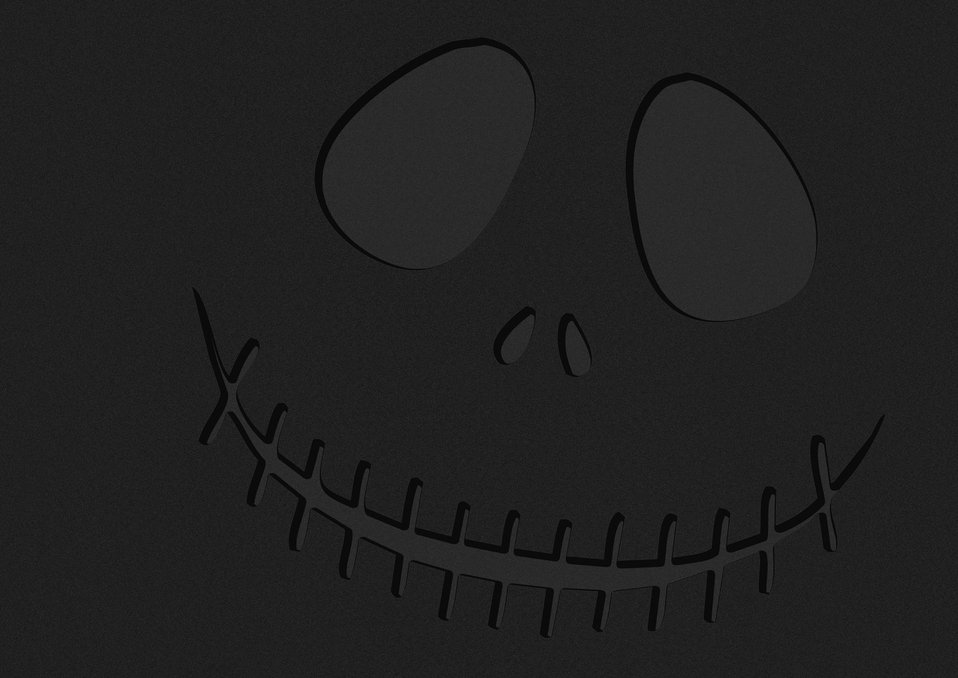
Dark halloween face illustration.